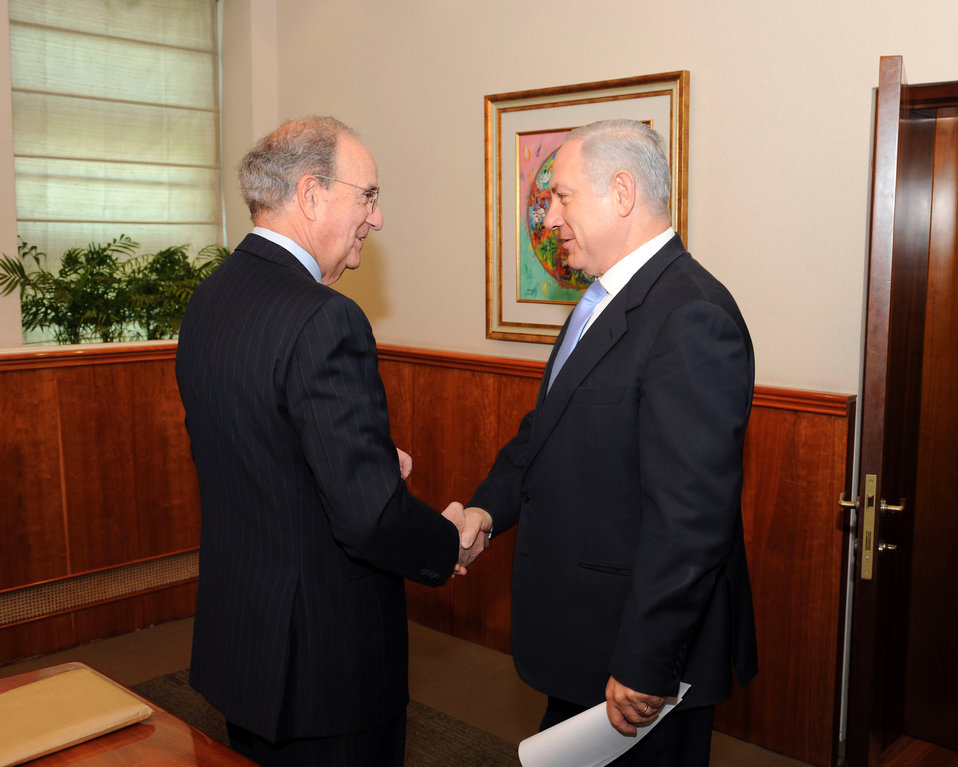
Special Envoy Mitchell Meets With Israeli Prime Minister

U.S. Special Envoy to the Middle East George J. Mitchell meeting with Israeli Prime Minister Benjamin Netanyahu at the Prime Minister Office in Jerusalem, October 30, 2009.